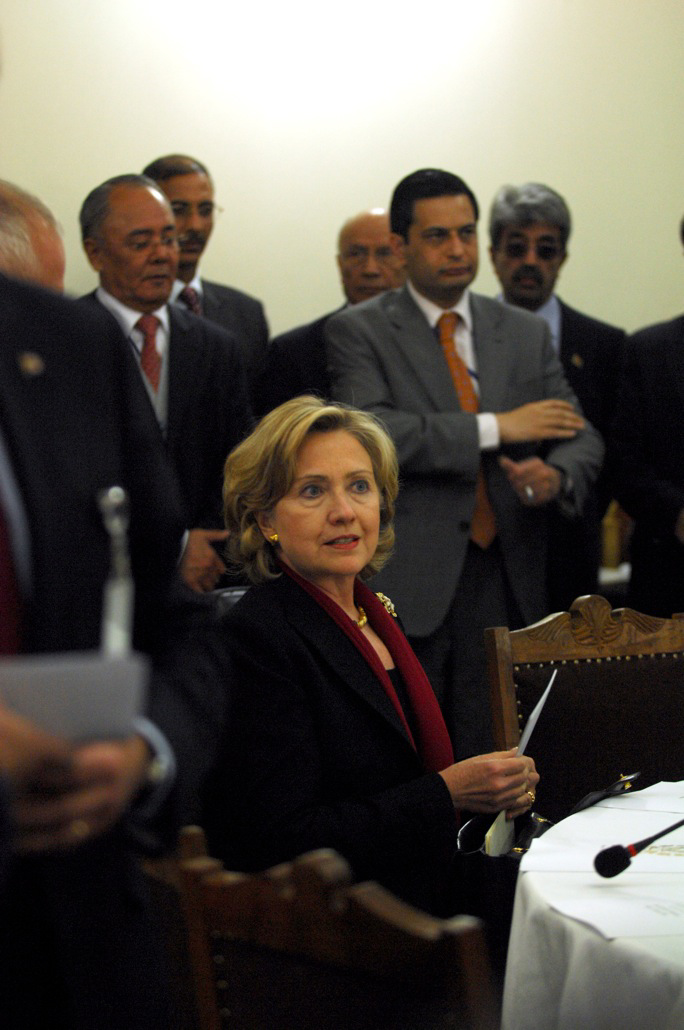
Secretary Clinton Travels to Afghanistan

U.S. Secretary of State Hillary Rodham Clinton during a meeting at the U.S. Embassy in Kabul, Afghanistan November 19, 2009. Secretary Clinton traveled to Afghanistan to attend President Hamid Karzai's November 19, 2009 inauguration ceremony, meet with Afghanistan's leadership, international partners and allies, U.S. troops, staff in Provincial Reconstruction Teams, and Embassy staff.